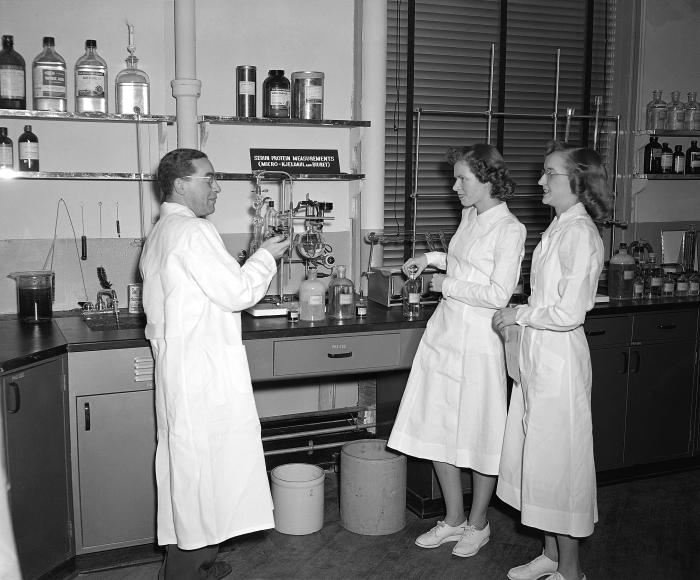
This historic 1951 image depicted two technicians being evaluated on their laboratory technique inside what at the time was the Communicable Disease Center's Pathology Lab, which later, in 1970, became the Center for Disease Control.